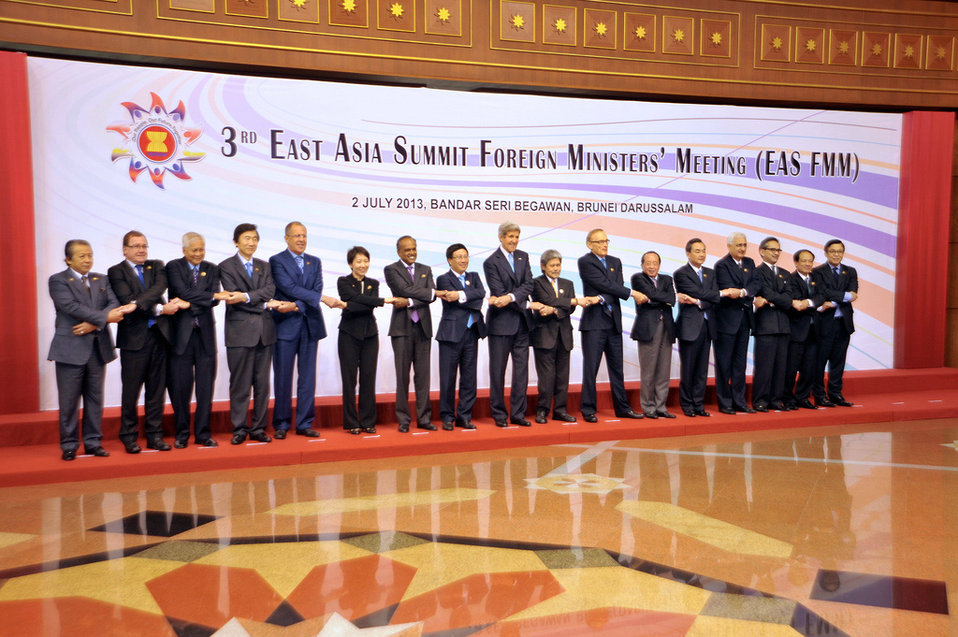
Secretary Kerry Participates in ASEAN Group Photo

U.S. Secretary of State John Kerry and his fellow foreign ministers engage in the ASEAN handshake as they pose for a group photo in Bandar Seri Begawan, Brunei, on July 2, 2013.